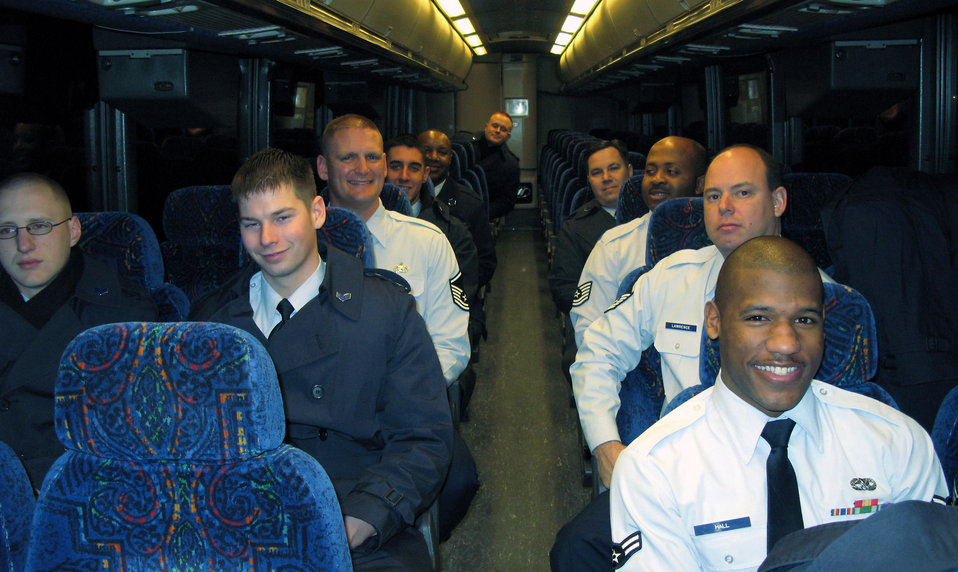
Airmen kick off inauguration day preparing for parade

Airmen from Andrews Air Force Base, Md., travel to Washington, D.C., to march in the Jan. 20 inauguration day parade.